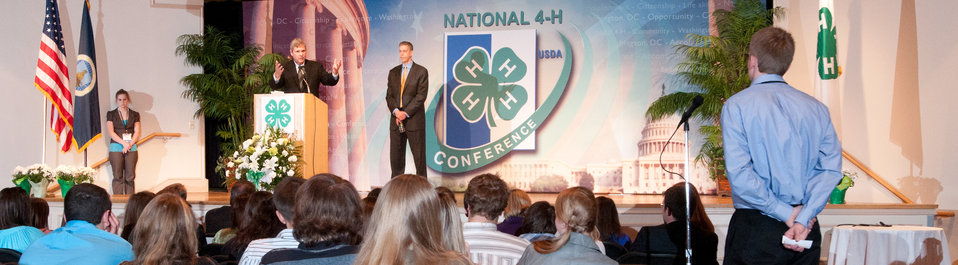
U.S. Department of Agriculture (USDA) Secretary Tom Vilsack (at podium) responded to a question from Garrett Kays (right) about land grants, during the National 4-H Conference on Tuesday, April 5, 2011 in Washington, DC. The conference is the premier youth development opportunity of the USDA. Aged between 15-19 years old the attendees were selected by various means by their states to be delegates to the conference.